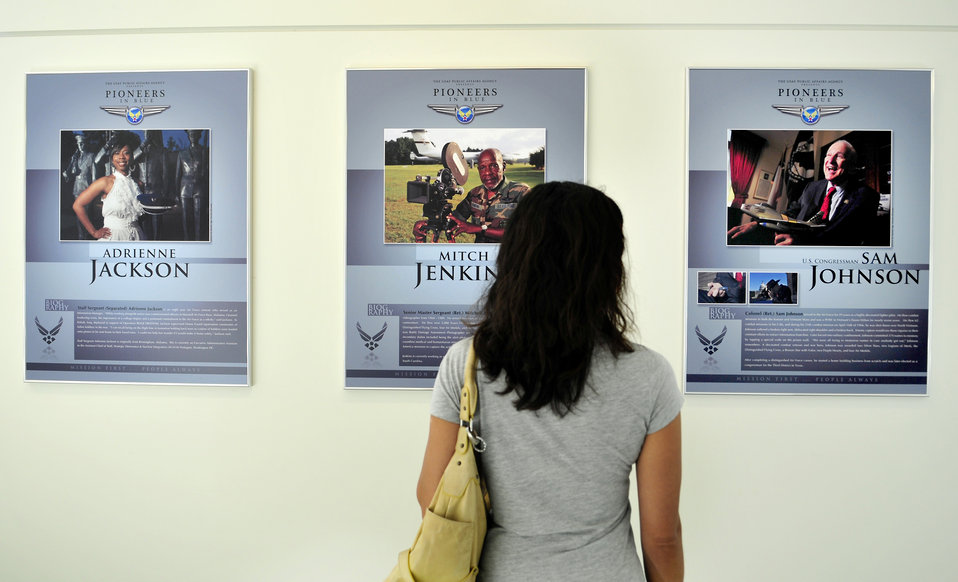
Pioneers in Blue